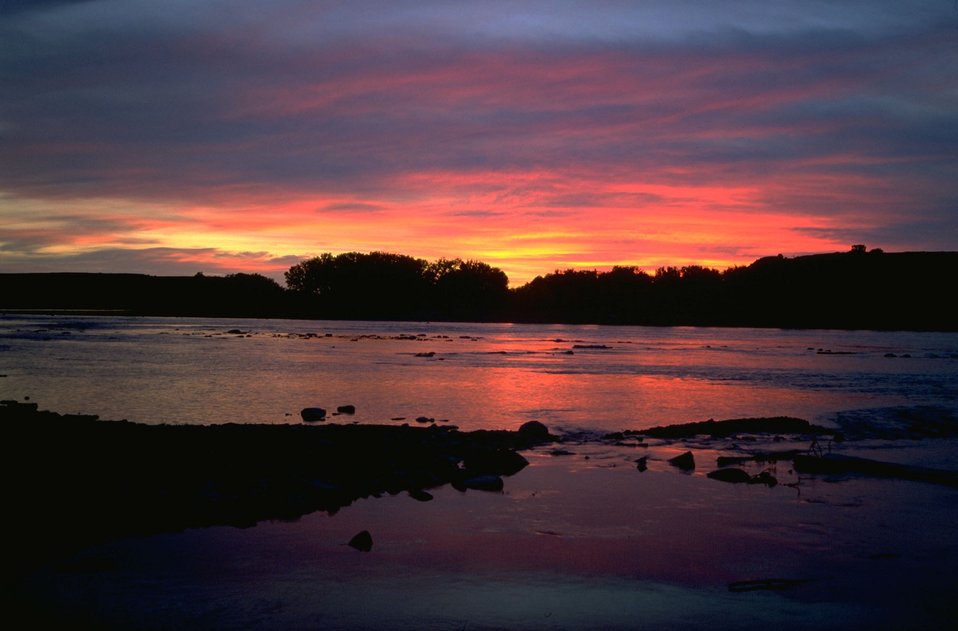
Scenic sunset on the Yellowstone River